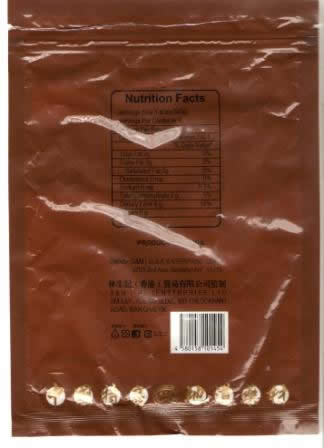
RECALLED - Grove Grow Notes Dried Taro

April 20, 2011 - Product Recall - S&M (USA) Enterprise Corp. Issues Alert on Undeclared Sulfites in Grove Grow Notes Dried Taro.